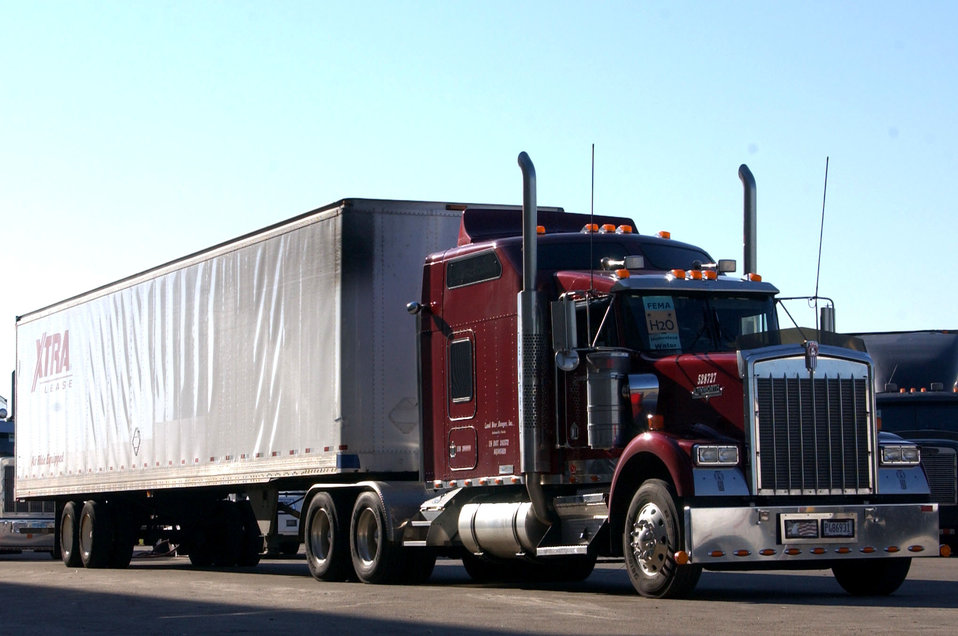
Wilma relief

HOMESTEAD AIR RESERVE BASE, Fla. (AFPN) -- Trucks began arriving here to pre-position water, military rations, ice and tarps for the post-hurricane relief effort. The trucks, which began arriving Oct. 20, have delivered supplies from Key West to northern Miami-Dade County since the storm passed. .